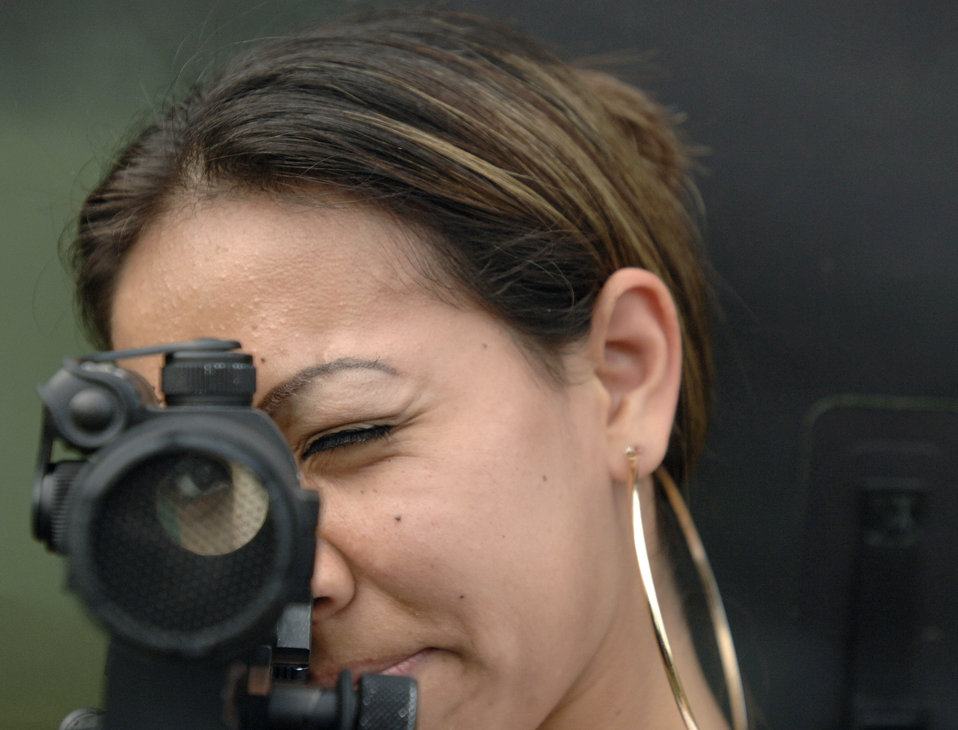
Airmen visit schools as part of Air Force Week Atlanta

Marietta High School student Lizbeth Juarez looks through the scope of a M4 Carbine rifle during an Air Force Week Atlanta event at Marietta High School Oct. 9 in Marietta, Ga. The event helped to educate students about the U.S. Air Force.